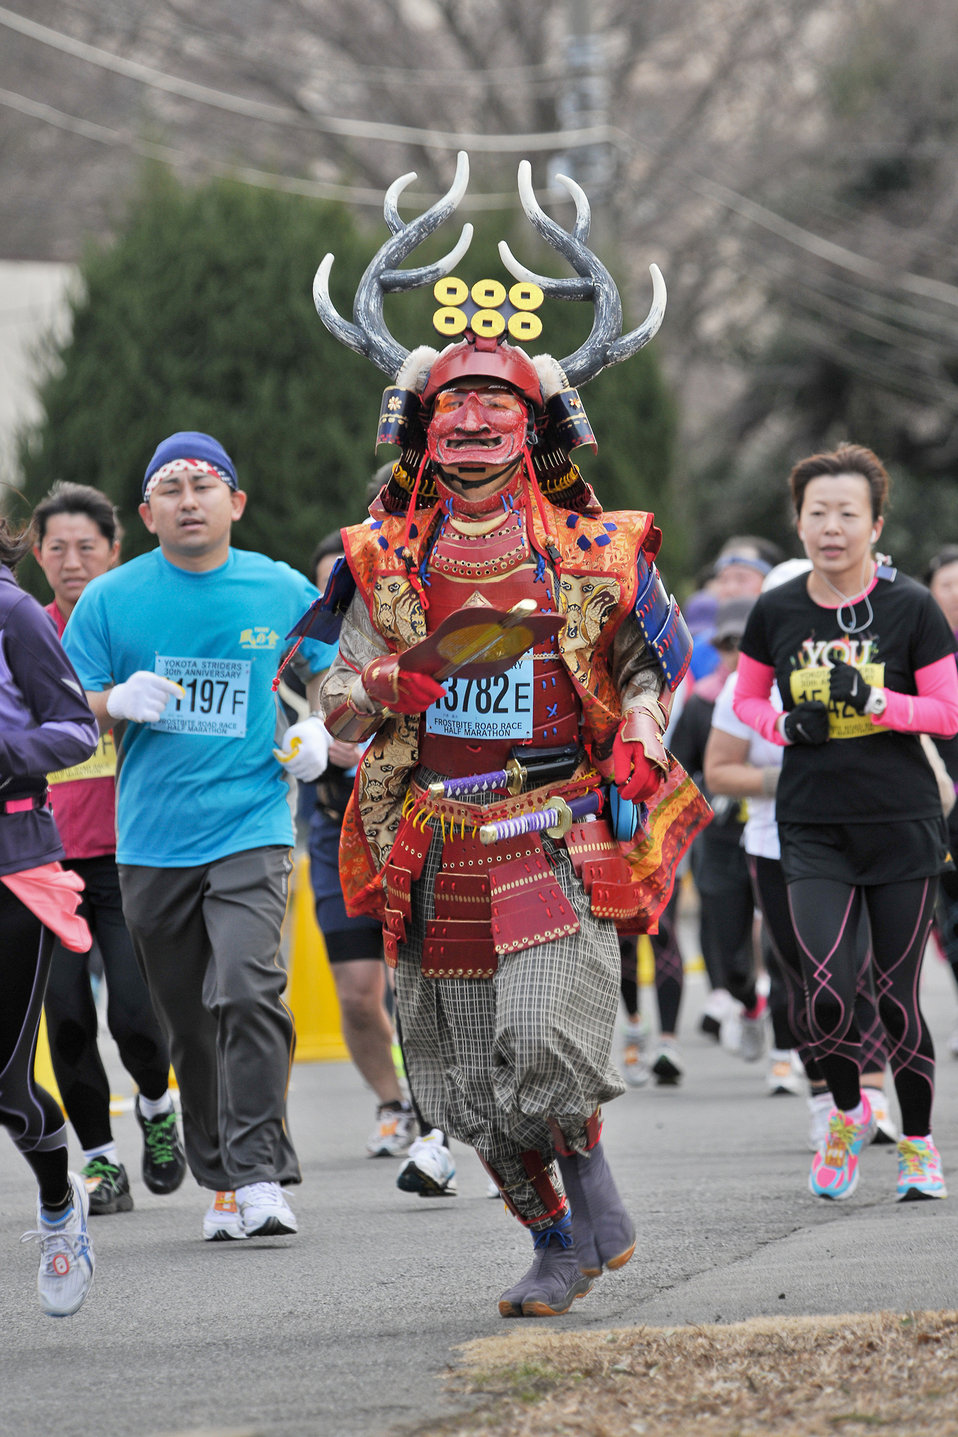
The 30th Annual Frostbite Road Race

A runner dressed as a samurai warrior participates in the 30th Annual Frostbite Run Jan. 16, 2011, at Yokota Air Base, Japan. Some of the 6,000 runners who participated chose to wear costumes, an act that has become a yearly tradition.